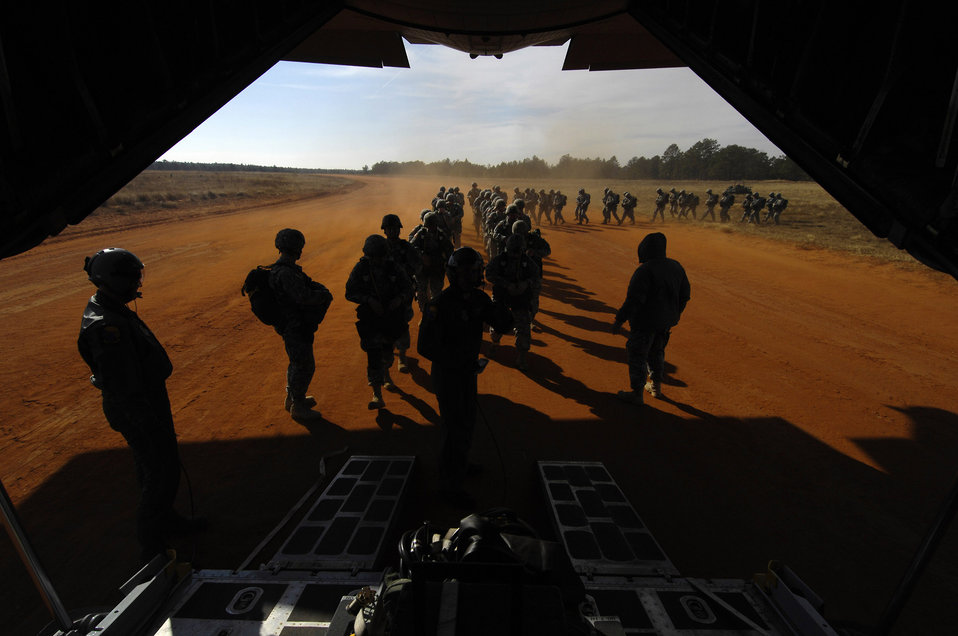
Toys for jumps

U.S. Army Soldiers board a C-130 Hercules Dec. 6 during Operation Toy Drop at Fort Bragg, N.C. The jump gives Soldiers and Airmen a way to help local families in need during the holidays. More than 3,000 servicemembers donated a toy to win a chance to earn foreign jump wings from a German or Irish jumpmaster.